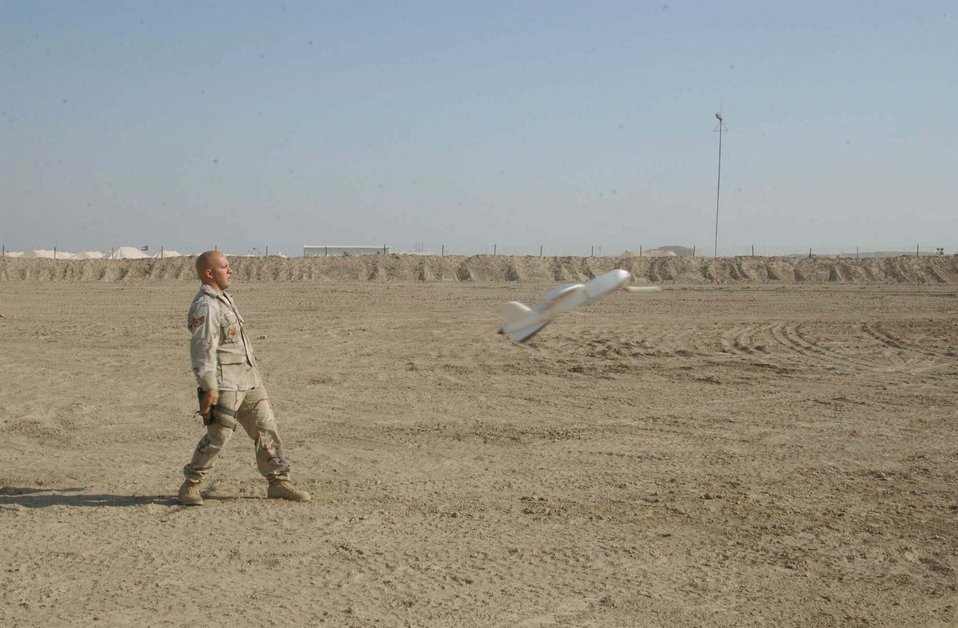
Take off

TALLIL AIR BASE, Iraq -- Staff Sgt. Joseph Vialpando recoils after releasing the Desert Hawk aircraft. The 4-foot-long plane uses a bungee cord catapult system to provide acceleration for takeoff. Vialpondo is part of the 332nd Expeditionary Security Forces Squadron.